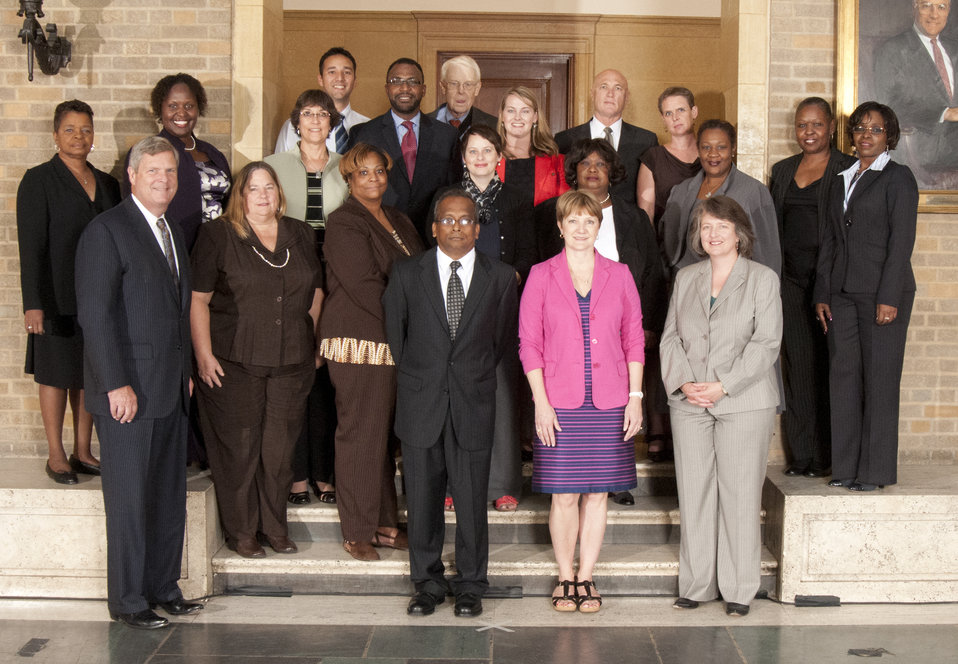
Agriculture Secretary Tom Vilsack and Deputy Agriculture Secretary Kathleen Merrigan with Honor Award Group Beginning Farmer Program Team, National Institute of Food and Agriculture (NIFA) on the patio of the U.S. Department of Agriculture in Washington, D.C. on Wednesday, Sept. 12, 2012. The Beginning Farmer Program Team provided outreach and collaboration with new stakeholder groups, which has enhanced access to USDA programs and the sustainability of farmers, especially socially disadvantaged and limited resource farmers and farm workers.